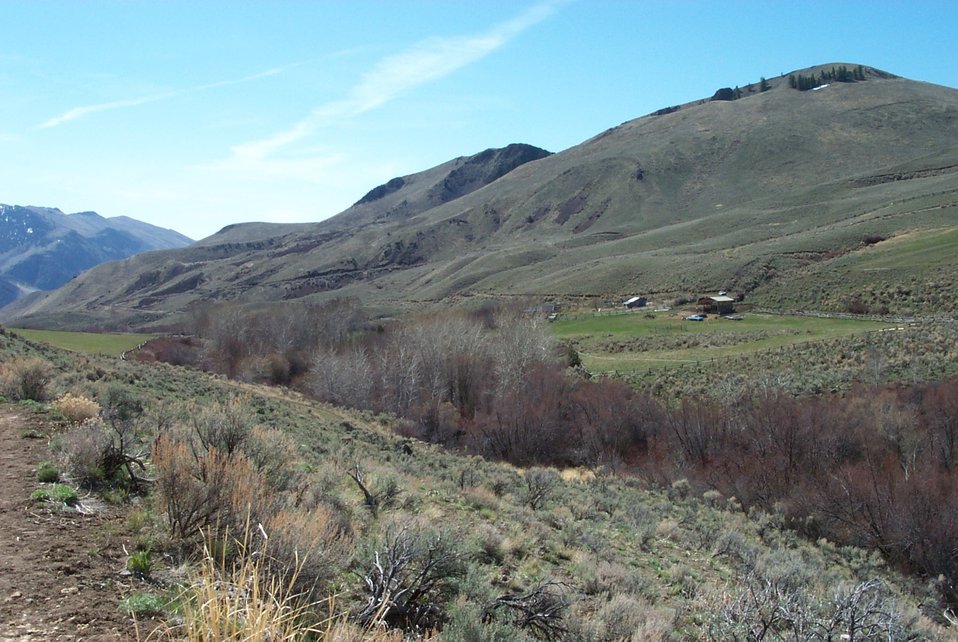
Salmon Field Office Realty Public access Exchange UCSC Upper Columbia Salmon Clearwater District